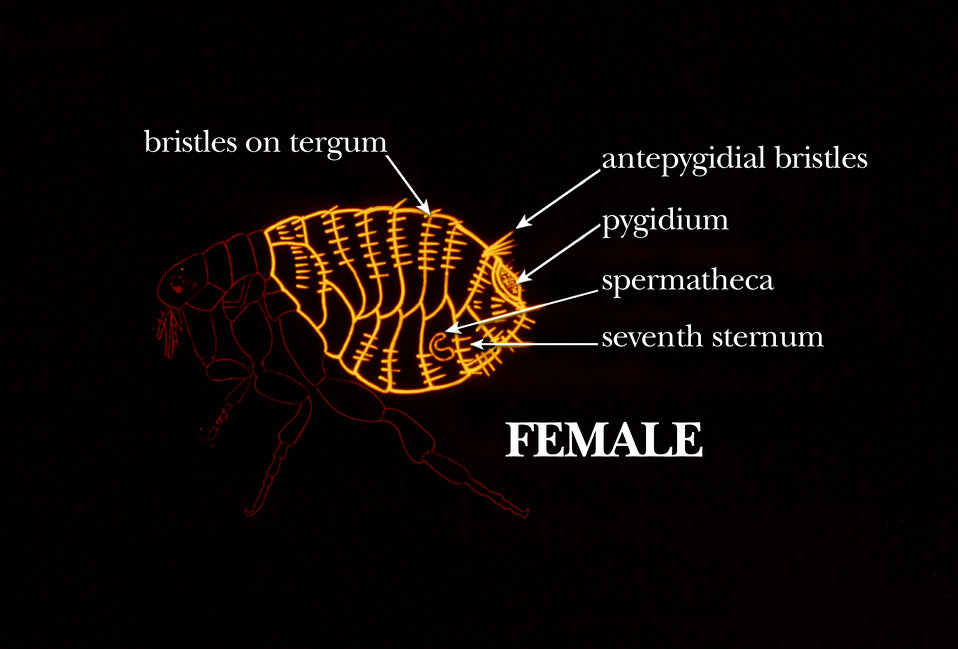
This illustration shows some of the identifying morphologic characteristics found on the abdomen of a typical female flea.